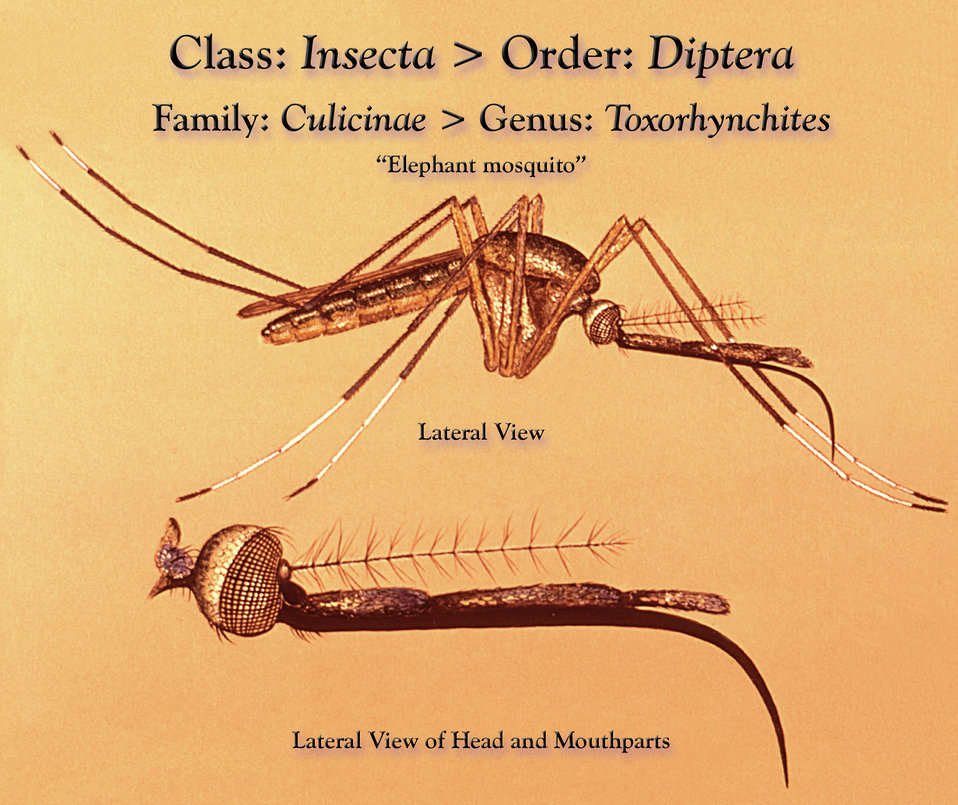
This illustration depicts a Toxorhynchites sp., 'Elephant mosquito' from a lateral view, and an inset of its head region revealing the morphologic details of its mouthparts.